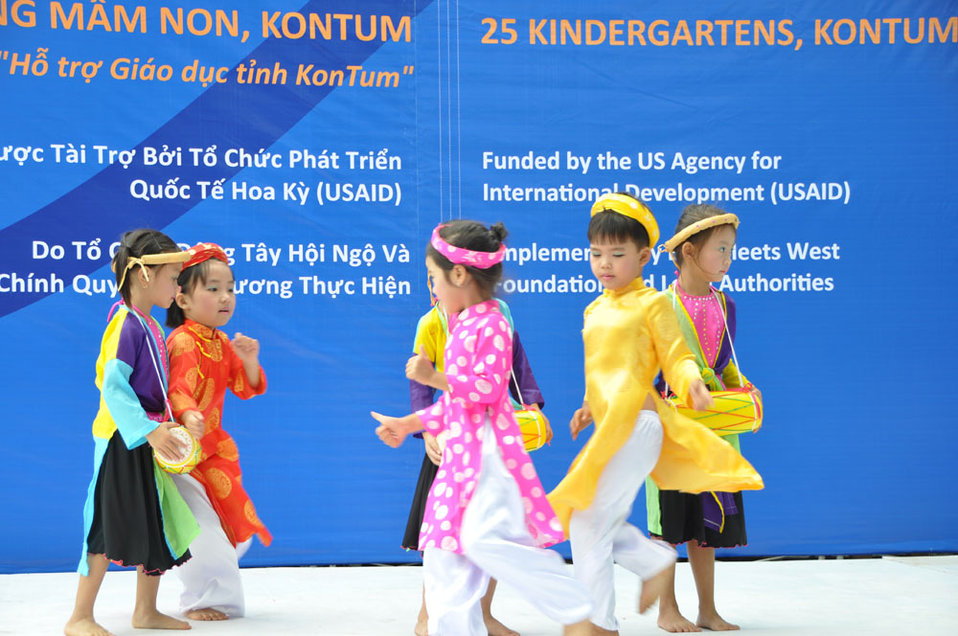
Children celebrate 25 refurbished and expanded kindergartens.